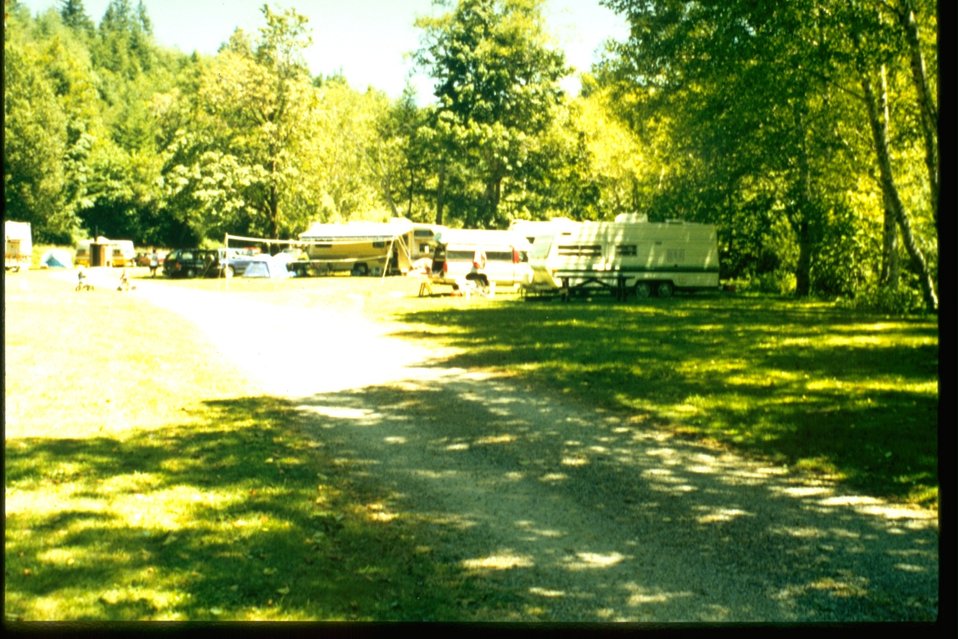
Vincent Creek Recreation Site. (Department of Forestry)